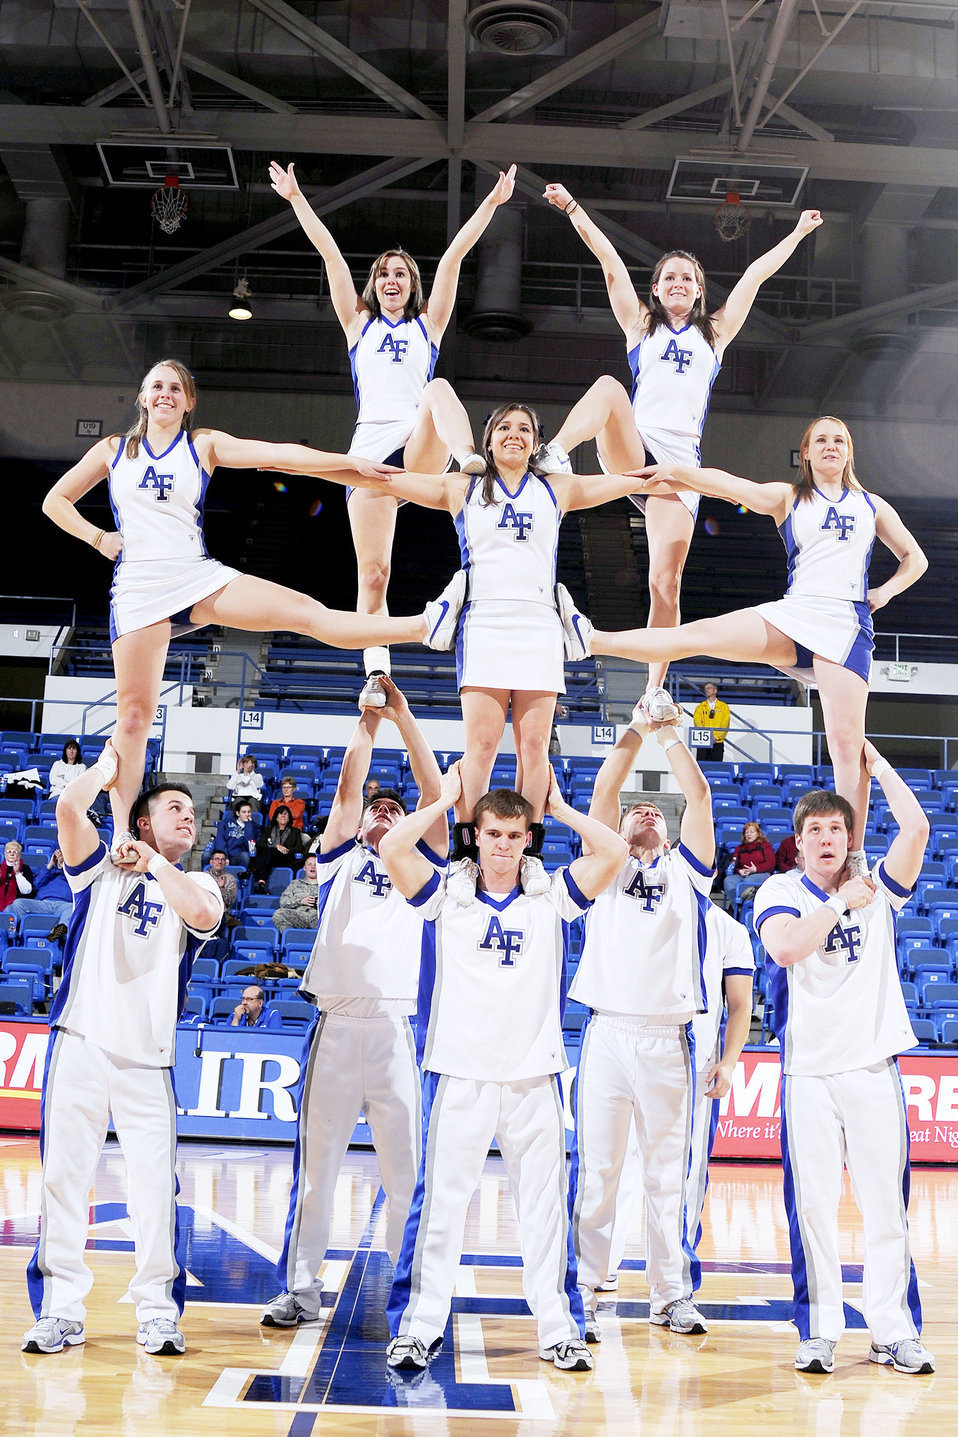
Air Force Academy

U.S. Air Force Academy, CO -- The Falcons cheer team performs during a time out as the Lady Falcons lost to the Denver Pioneers 64-62 at Clune Arena Dec 9. Air Force returns to action Saturday, Dec 19, hosting Bradley.